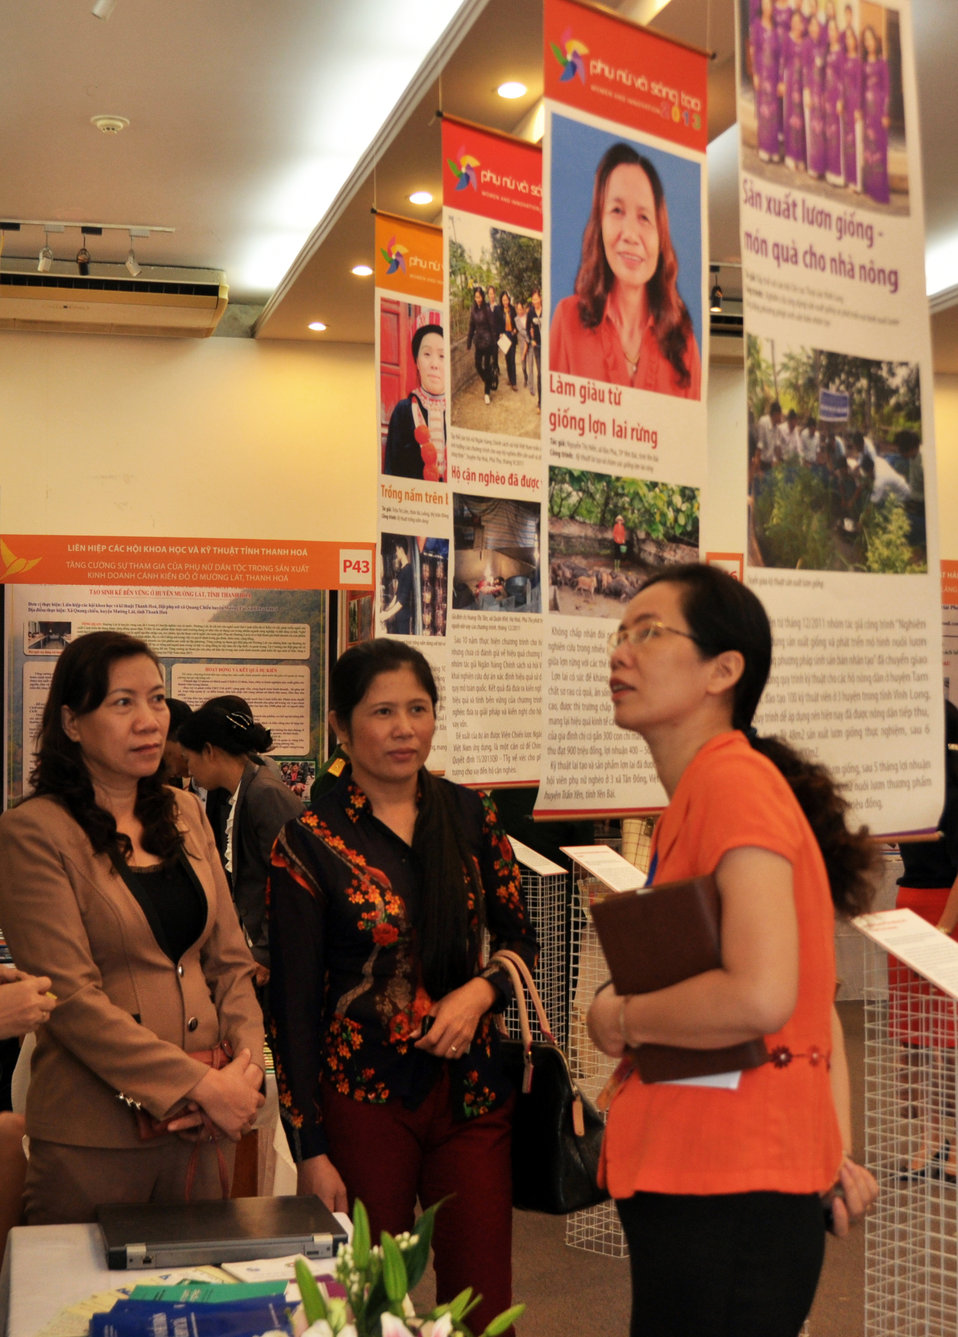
Vietnam Women Innovation Day 2013

Hanoi, October 1, 2013.